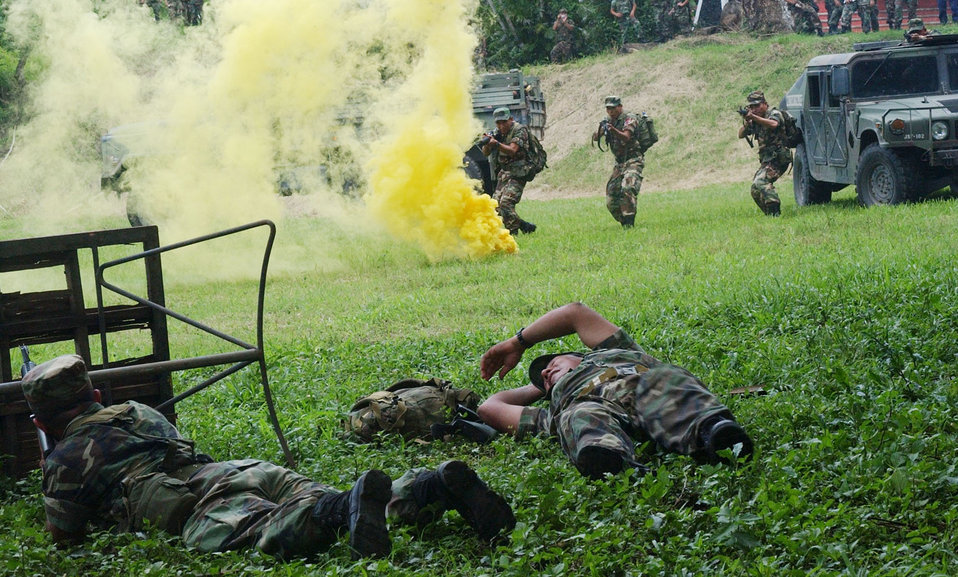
Task force provides OIF training to El Salvadorian military

El Salvadorian soldiers neutralize the enemy during a culmination exercise that followed a week-long training mission with members of Joint Task Force-Bravo. During a week-long training mission, soldiers were taught force protection measures, convoy defense skills and improvised explosive device detection, to prepare them for their upcoming deployment in support of Operation Iraqi Freedom.